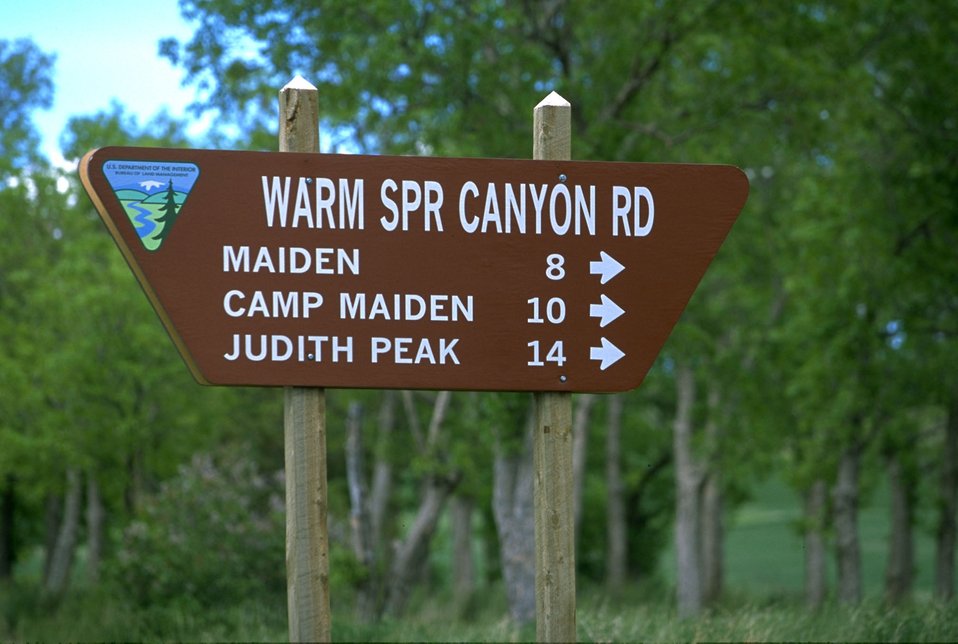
BLM sign indicating miles to recreation sites